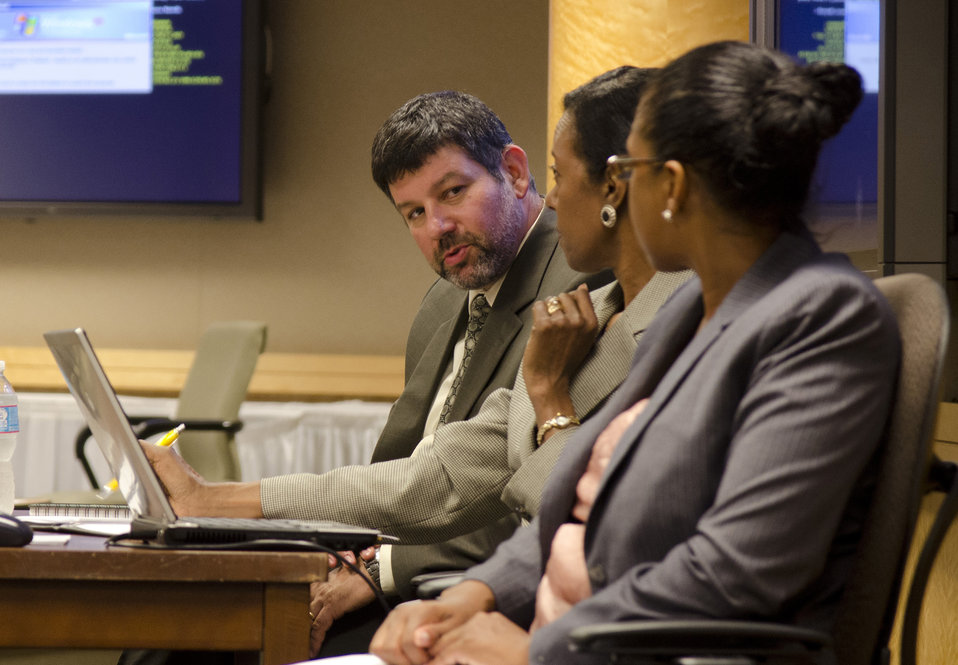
(L to R) U.S. Department of Agriculture (USDA) Office of Human Resource Management (OHRM) Virtual University, Employee Development and Training Specialist Jacob Faibisch, USDA OHRM Virtual University, Employee Development and Training Specialist Adoria Johnson, and USDA OHRM Virtual University Pathways Programs Officer and Student Intern Development Program Manager Carol Scott confer at a session of the USDA Internship Program Listening Session held in USDA’s South Building in Washington, D.C. on Monday, August 7, 2012. The purpose of the USDA Internship Program Listening Session is to provide interns with a forum to express their views about their experiences as a USDA intern. These young people will be among the most promising future USDA leaders and participate in an individual discussion and group session that will develop leadership skills.